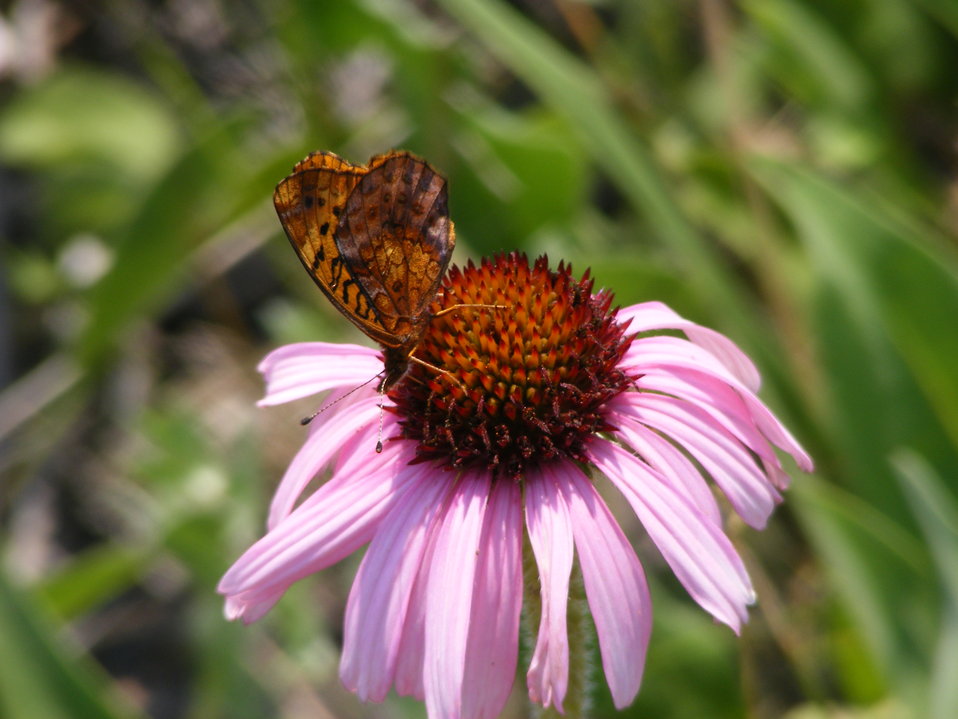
A Butterfly Magnet

Purple coneflowers attract many species of butterflies and other insects, including this meadow fritillary. Photo taken at a Waterfowl Production Area in Waubay Wetland Management District.